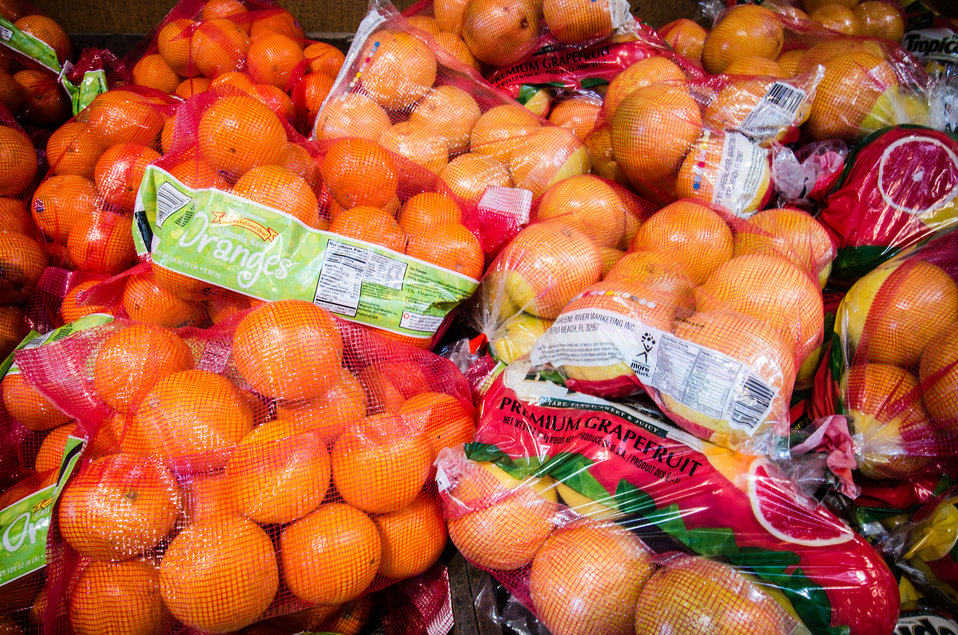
Bags of orange and grapefruit at a grocery store in Fairfax, Virginia, on March 3, 2011.